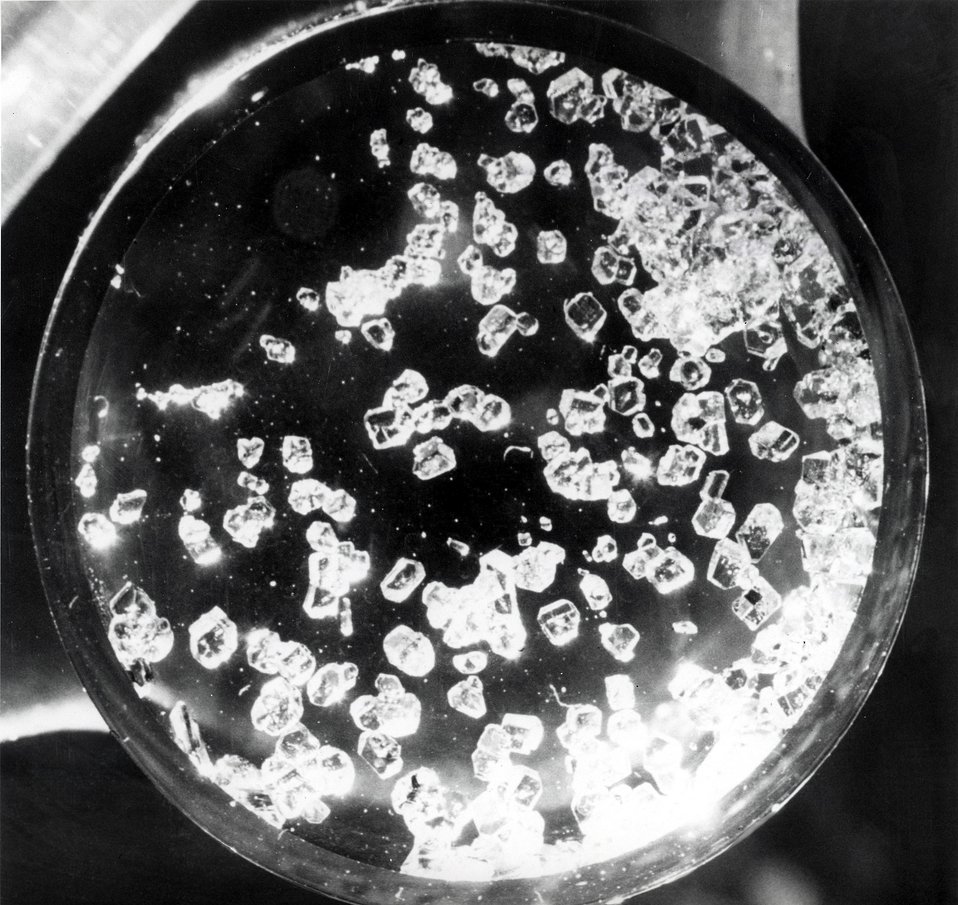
Crystals of xenon tetrafluoride. c.1964